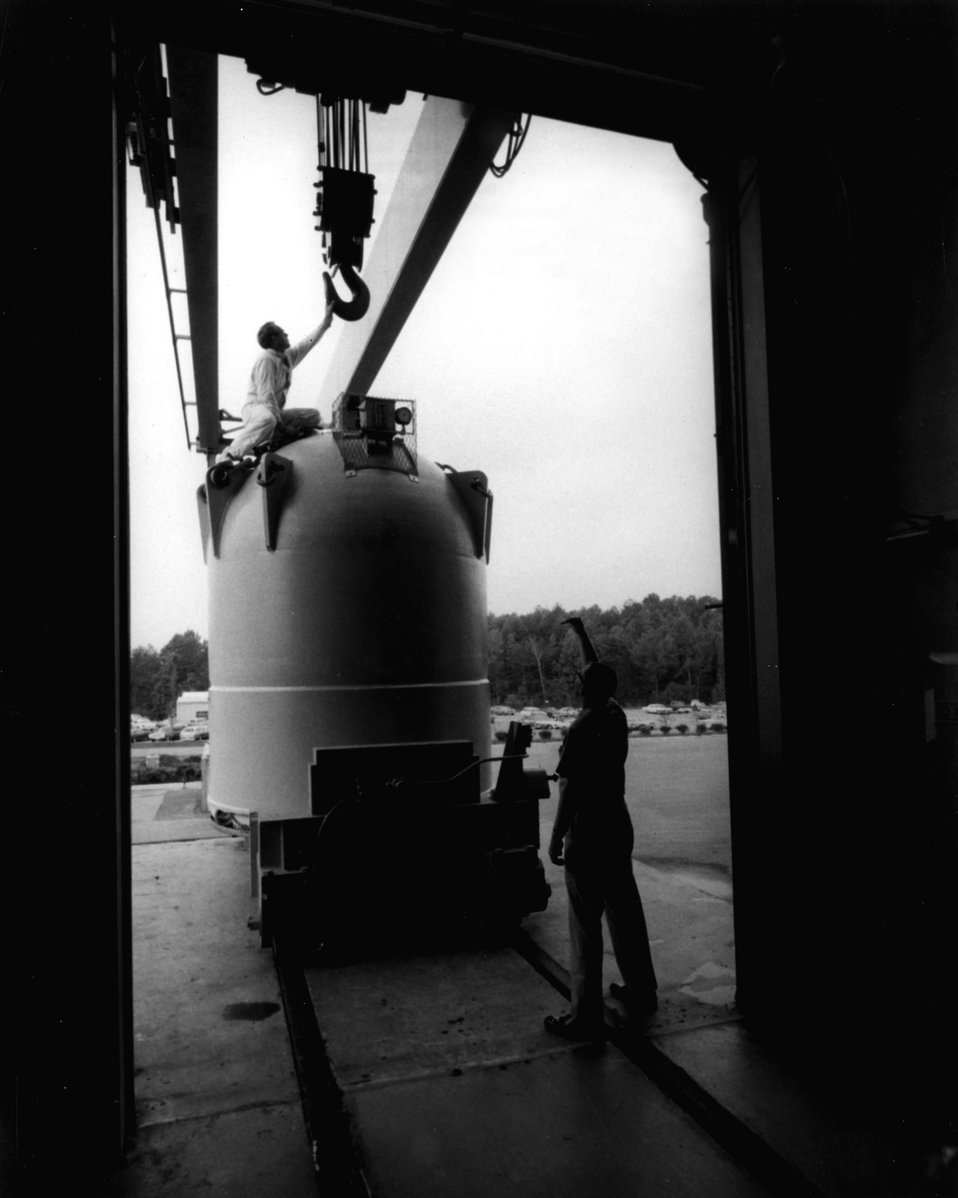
HFIR TARGET ROD CARRIER...Target rods irradiated in Oak Ridge National Laboratory's High Flux Isotope Reactor are transferred in this carrier to the Transuranuim Processing Plant for chemical separation of fission products and transuranium elements. c. 1968